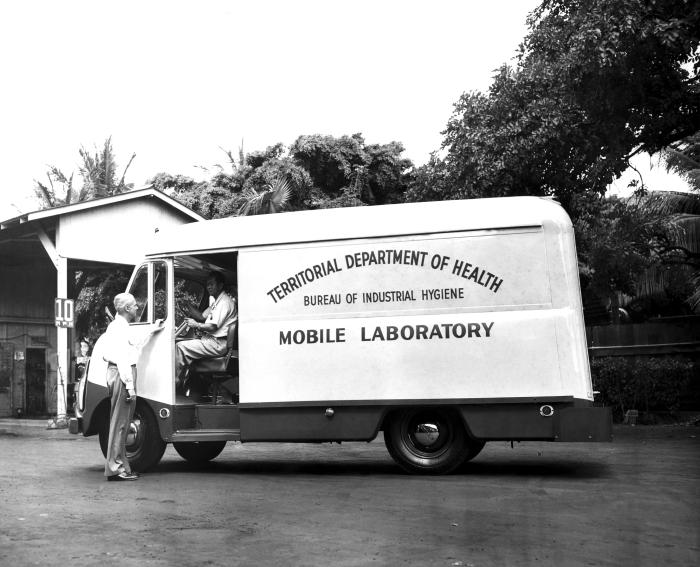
This May, 1952 historical photograph was provided by the Center for Disease Control's (CDC), National Institute for Occupational Safety and Health (NIOSH), and it depicted two public health workers from the Territorial Department of Health, Bureau of Industrial Hygiene in one of its Mobile Laboratory vehicles in Hawaii.